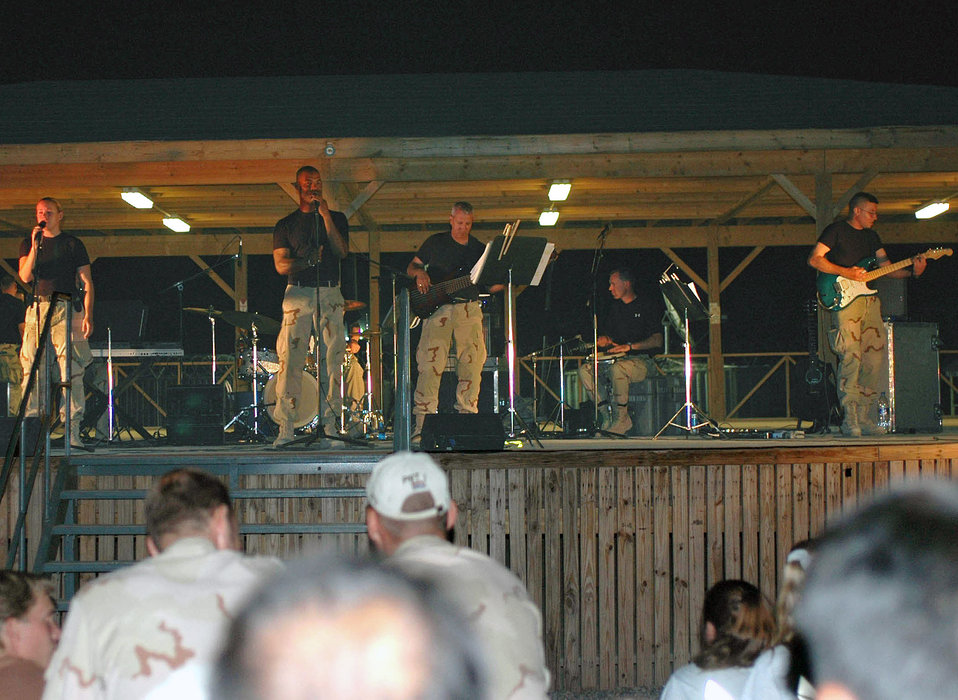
CENTAF Band performs for Kandahar servicemembers

The U.S. Central Command Air Forces Band performs for deployed servicemembers at Kandahar Airfield, Afghanistan. The CENTAF band played two concerts July 29 and 30.